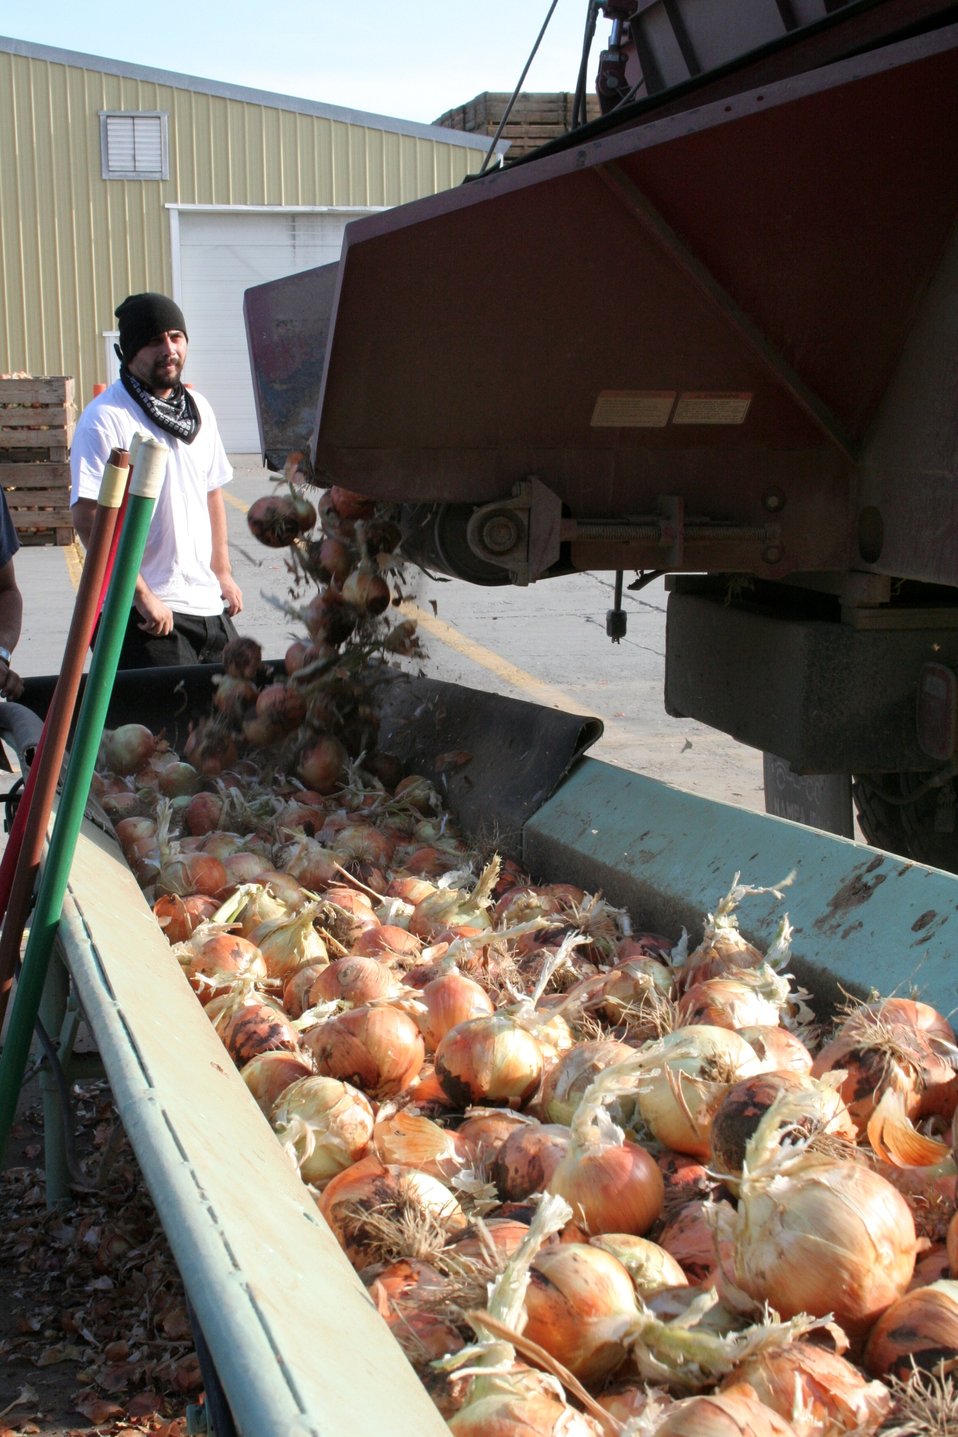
On the Road with Mike Taylor

FDA Deputy Commissioner Michael Taylor and colleagues started a five-day tour of the Pacific Northwest on Sunday, Aug. 11, 2013 -- visiting Idaho, Oregon and Washington -- to get a first-hand look at produce production and irrigation operations, and to discuss the proposed Produce Safety Rule with growers, food industry representatives and state officials. This photo shows the operations of Murakami Produce, a seasonal packer and shipper of dry bulb onions located in Ontario, Ore. For more about Mike's multi-region tour, read these FDA Voice blog posts:

• Hearing the Concerns of Maine Growers Striving for Agricultural Diversity
• On the Road with Mike Taylor: Touring the Pacific Northwest
• On the Road with Mike Taylor, Day 2: Frank Talk in Farm Country
• On the Road with Mike Taylor, Day 3: Families and Partnerships
• On the Road with Mike Taylor, Day 4: Looking to the Future